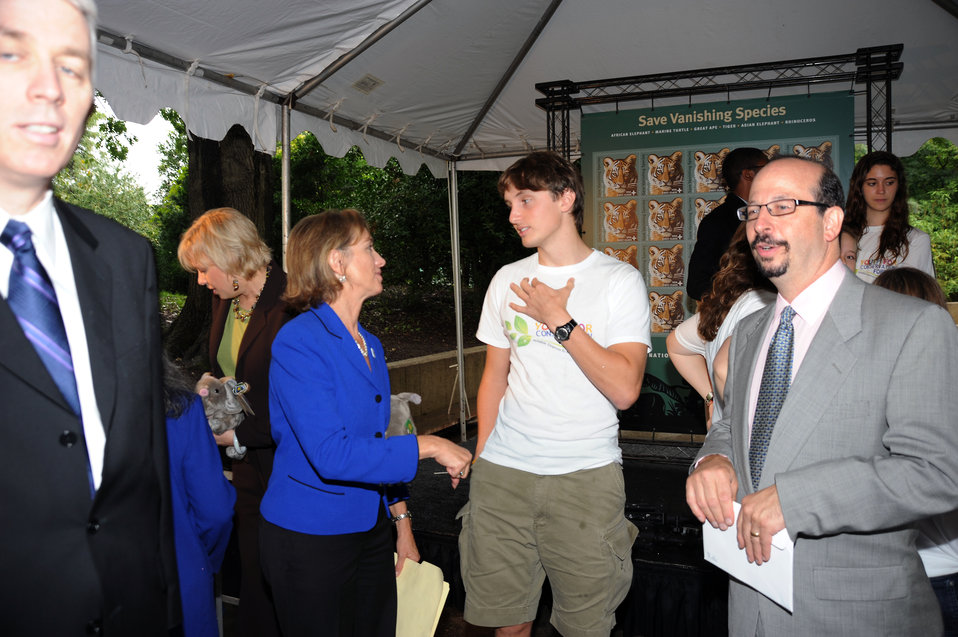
Save Vanishing Species Stamp First Day of Issue